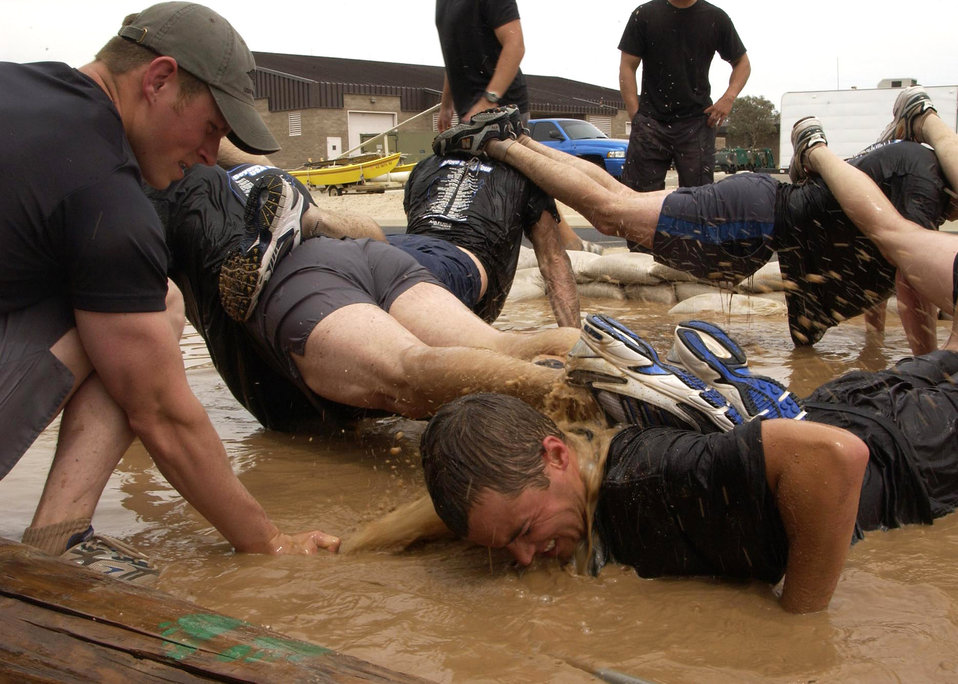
PJ selection process

Staff Sgt. Chris Uriarte monitors applicants during a push-up exercise at the 306th Rescue Squadron pararescue screening Friday, April 21, 2006, at Davis-Monthan Air Force Base, Ariz. Applicants must pass a timed 3-mile run, 1,500-meter swim, calisthenics and other tasks before proceeding to the 10-week indoctrination course at Lackland AFB, Texas. Sergeant Uriarte is a pararescueman with the 306th.